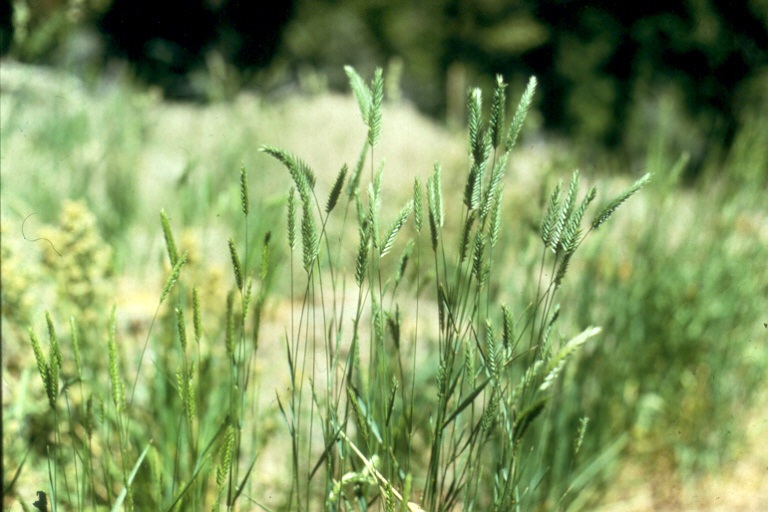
Creasted Wheat grass Salmon FIeld Office UCSC Upper Columbia Salmon Clearwater District